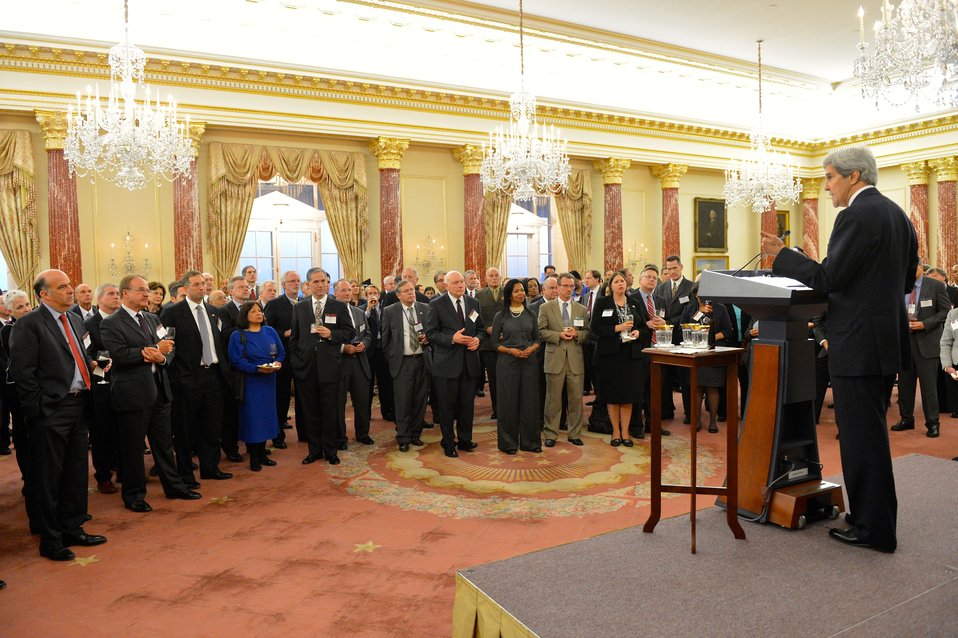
Secretary Kerry Delivers Remarks at the Global Chiefs of Mission Conference Reception

U.S. Secretary of State John Kerry delivers remarks during a reception at the Global Chiefs of Mission Conference at the U.S. Department of State in Washington, D.C., on March 11, 2014.